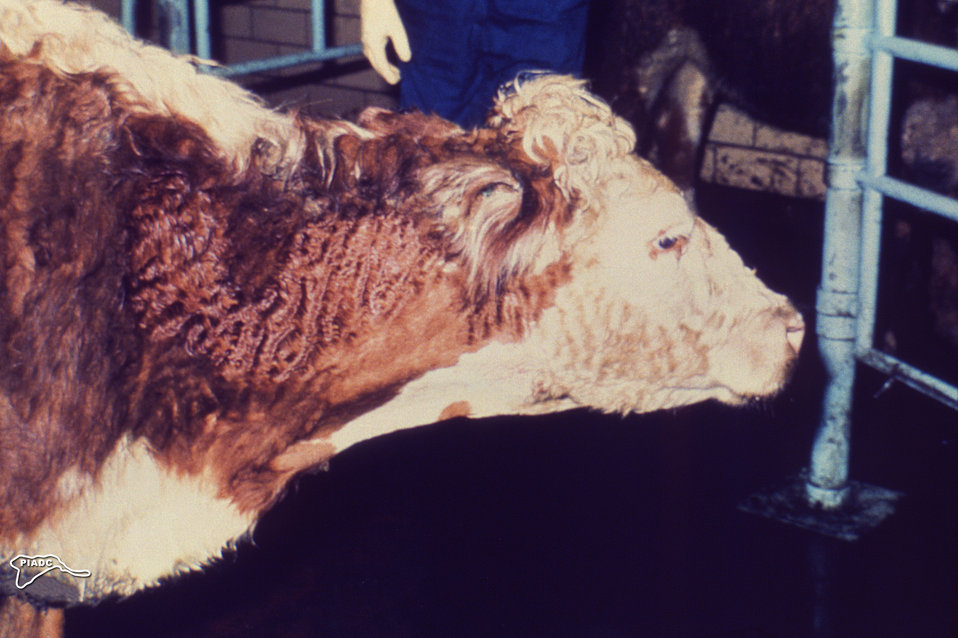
From the 'Illustrated Manual for the Recognition and Diagnosis of Certain Animal Diseases', published in 1982, by the Mexico-United States Commission for the Prevention of Foot and Mouth Disease, this photograph depicts a bovine posed with its neck out stretched in order to allow itself to breath more easily due to a contagious bovine pleuropneumonia (CBPP) infection.